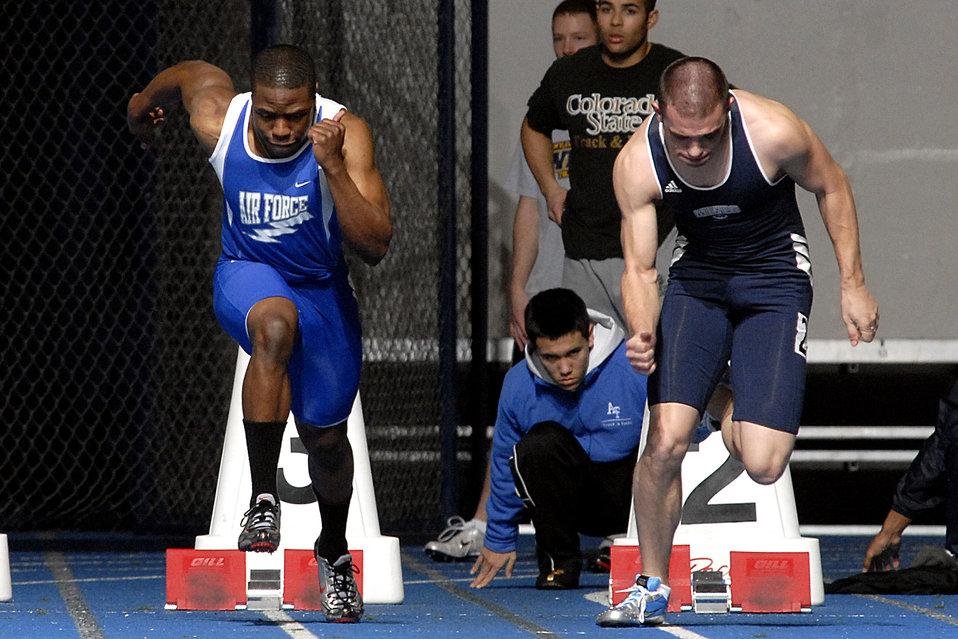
Falcons Conclude Competition at Air Force Open

Freshman Ladarious Woods breaks from the blocks in the 60-meter dash, finishing in sixth place overall with a time of 6:94 seconds, tying teammate junior Kellen Curry. Woods also ran in the 200-meter dash, clocking a ninth-place time of 22:53. The Falcons hosted the Don Barrett-Air Force Open on Feb. 9. Competing at the Academy's Cadet Field House, the Falcons collected 26 top-10 finishes during the non-team scoring meet.